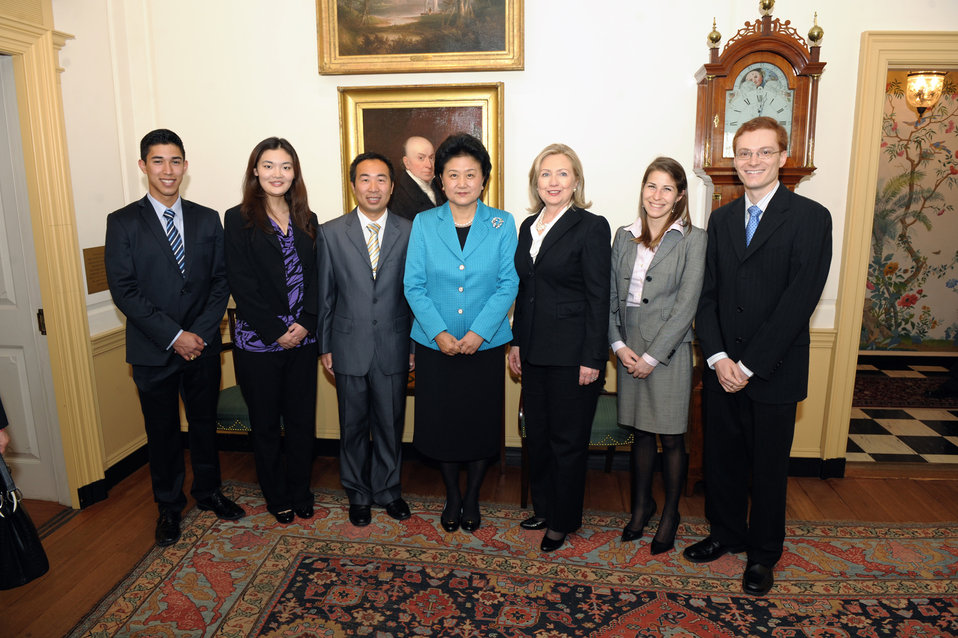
Secretary Clinton, Chinese State Councilor Liu Yandong Pose for a Photo With U.S.-China Consulation on People-to-People Exchange Students

U.S. Secretary of State Hillary Rodham Clinton and Chinese State Councilor Liu Yandong pose for a photo with students during the U.S.-China Consultation on People-to-People Exchange, at the U.S. Department of State in Washington, D.C., on April 12, 2011.